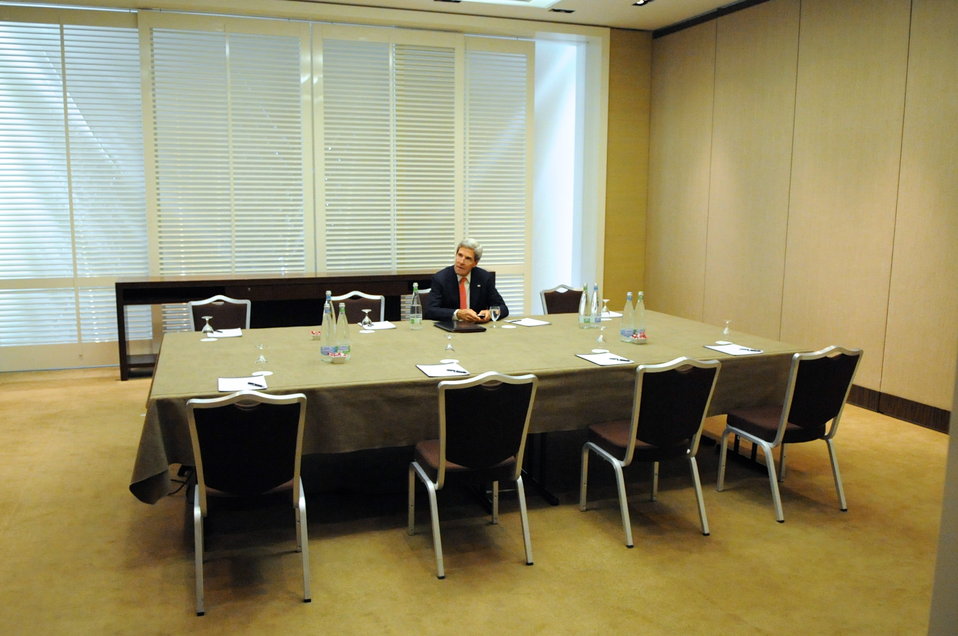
Secretary Kerry Prepares for Second Syrian Chemical Weapons Session

11:04 a.m., September 13, 2013 - U.S. Secretary of State John Kerry awaits Russian Foreign Minister Sergey Lavrov before their second negotiating session over the elimination of Syrian chemical weapons.